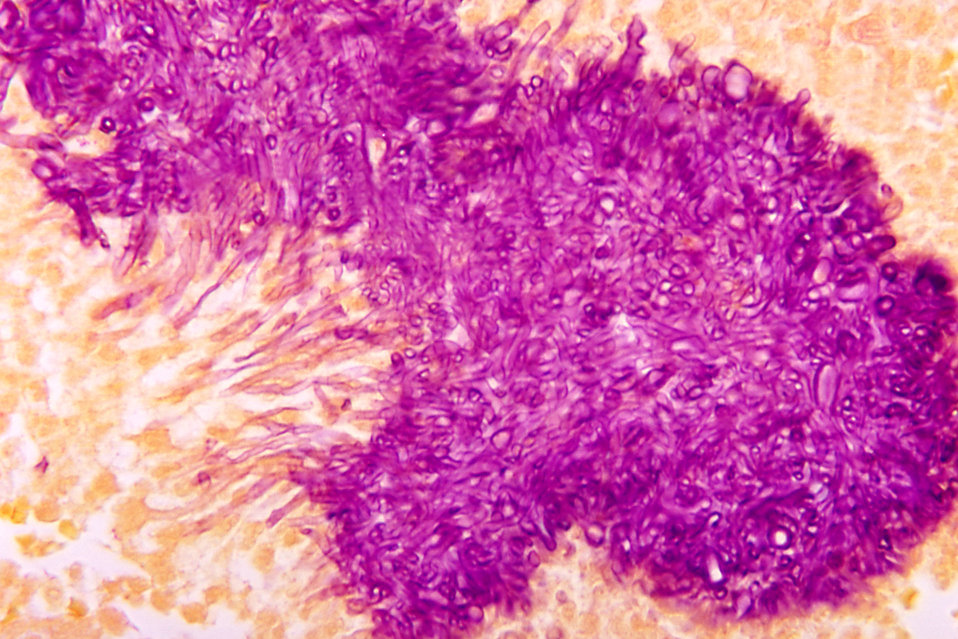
Note the histopathologic appearance of 'black grain mycetoma' due to Madurella mycetomatis using a Gridley stain.